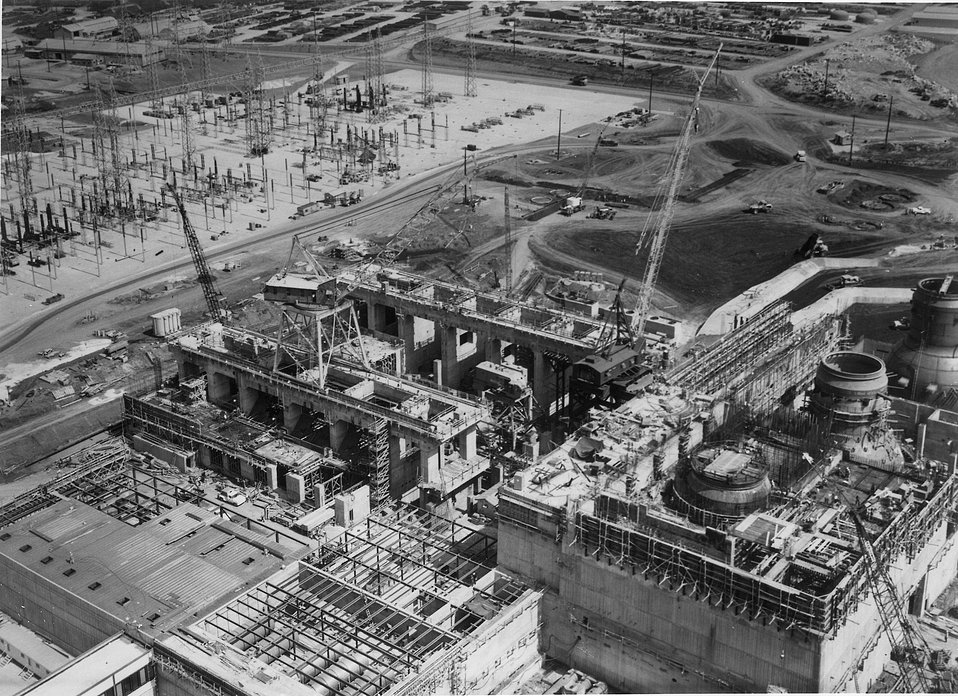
The Tennessee Valley Authority has under construction the first nuclear power reactors to be proposed in the 1,000-Mwe. range. Shown is a general view of the Browns Ferry complex taken during October, 1969. Circa 1970.